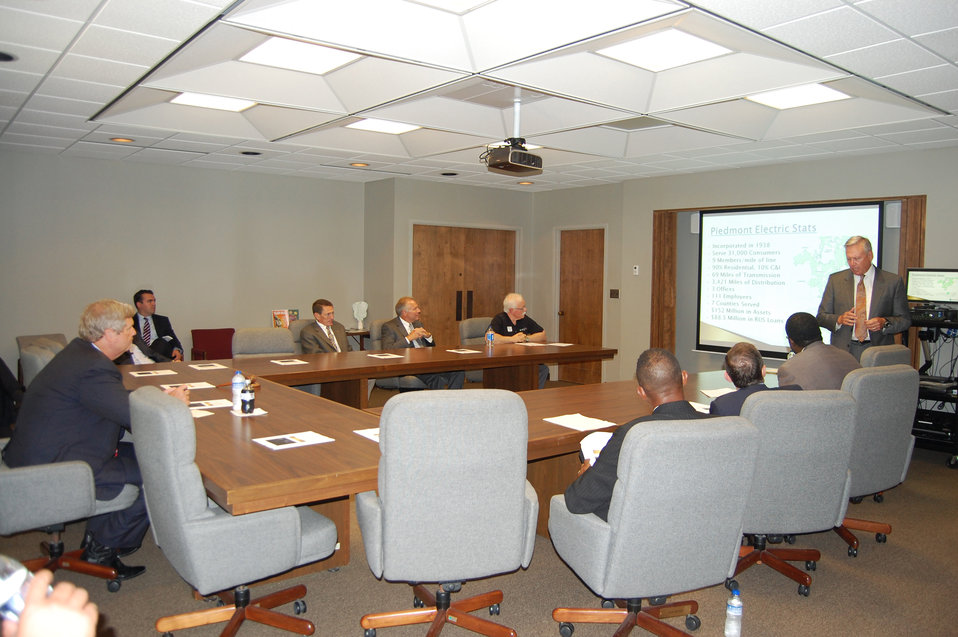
General Manager Piedmont Electric General Manager Piedmont Electric Membership Corporation (EMC) Randy Brecheisen briefs Agriculture Secretary Tom Vilsack and other U.S. Department of Agriculture (USDA) officials on the history of Piedmont Electric Membership Corporation (EMC) at Piedmont EMC in Hillsborough, NC., on Friday, Sept. 7, 2012. Piedmont EMC received a guaranteed loan from the U.S. Department of Agriculture (USDA) to extend its system by 52 miles and to help provide service to about 1,000 new member consumers. The cooperative will also increase capacity for 100 current consumers and improve the reliability of about 40 miles of line.